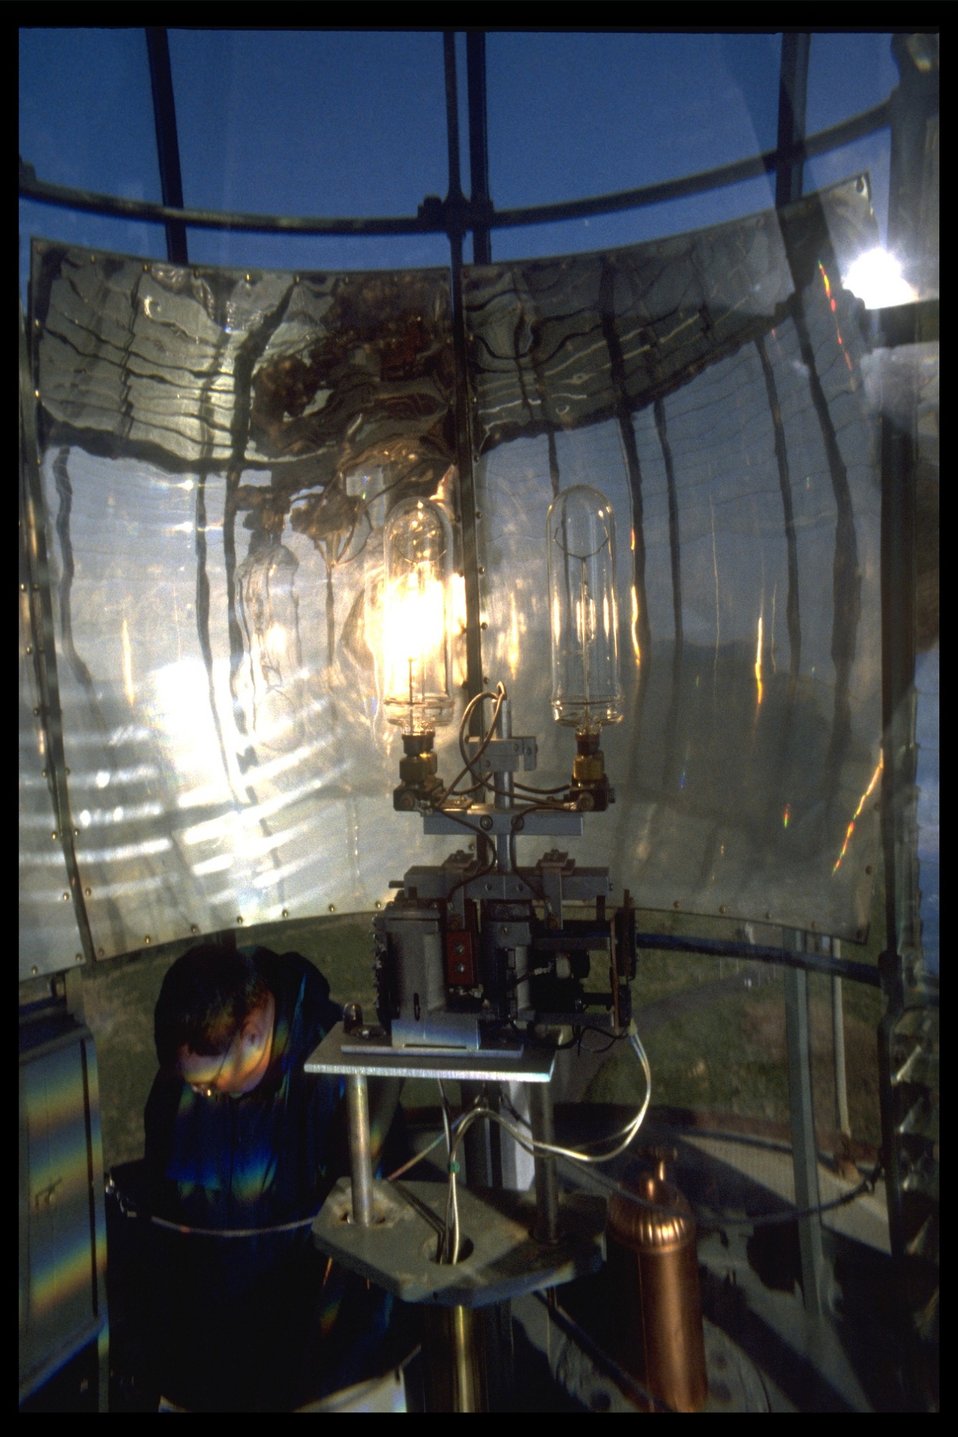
The lightbulb (1000 watt lens) on the interior of the Yaquina Head lighthouse.